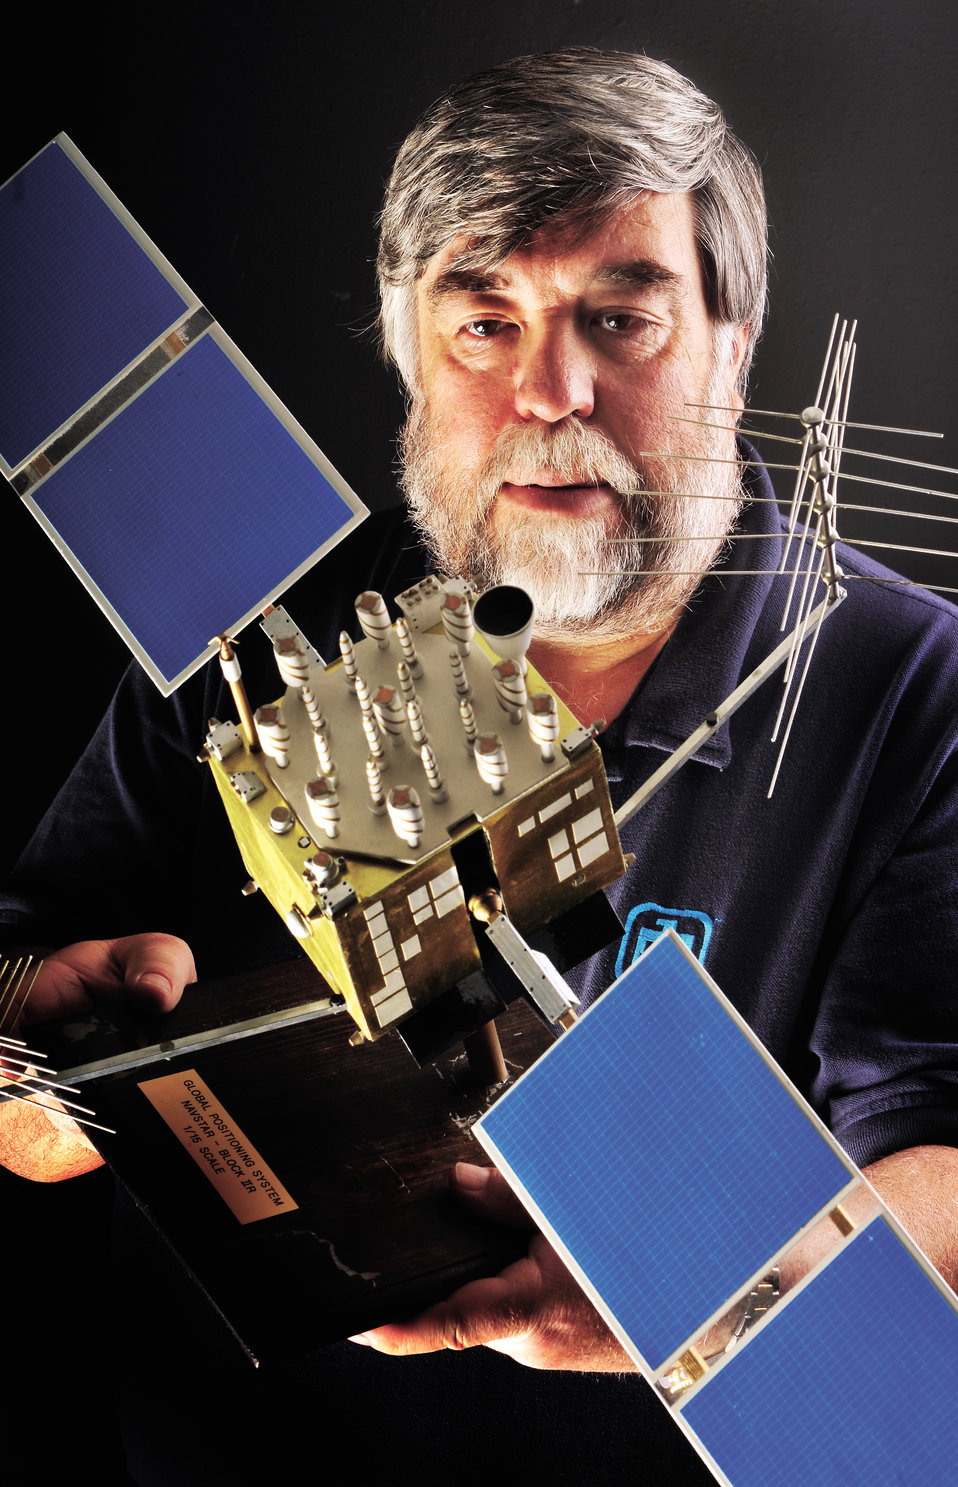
Sandia engineer Steve Yearout displays a 1/15 scale model of a NAVSTAR Block IIR GPS satellite.

The GPS satellite is part of the Air Force's Global Positioning System, which lets people know exactly where they are. Sandia provides optical and electromagnetic pulse (EMP) sensors, radio frequency, and the main processors that coordinate all commands, as well as return sensor output back to ground. Los Alamos National Laboratory provides x-ray and particle detectors. The sensor components are delivered to Sandia to an Air Force contactor, to integrate onto the GPS satellite package. The Air Force launches GPS satellite from Cape Canaveral, Florida, the once in orbit the sensor components are switched on remotely by yearout, and his teammates at Sandia, Los Alamos and the Air Force.